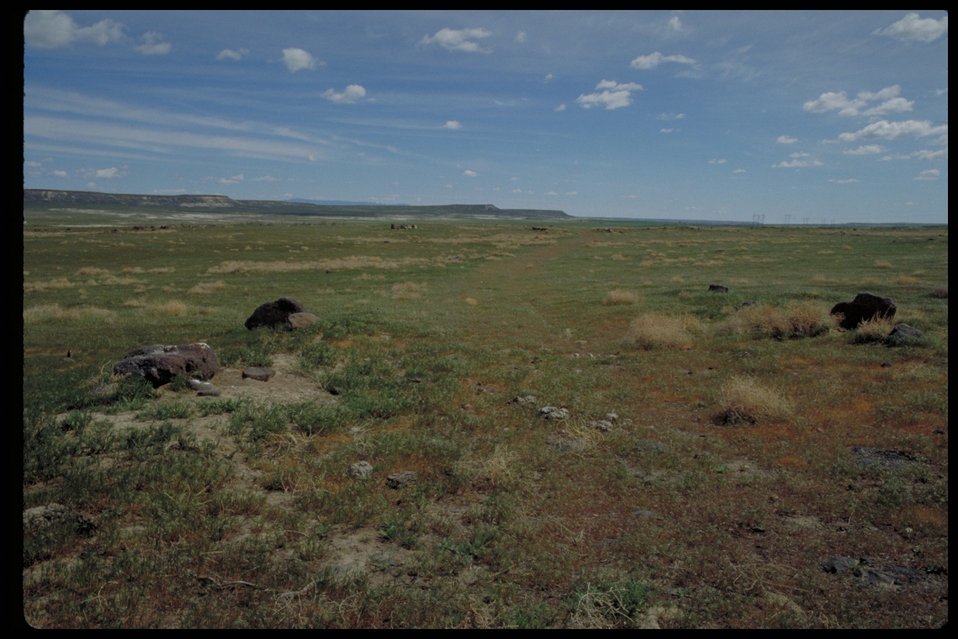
Oregon Trail Near Cove Recreation Site Lower Snake River District